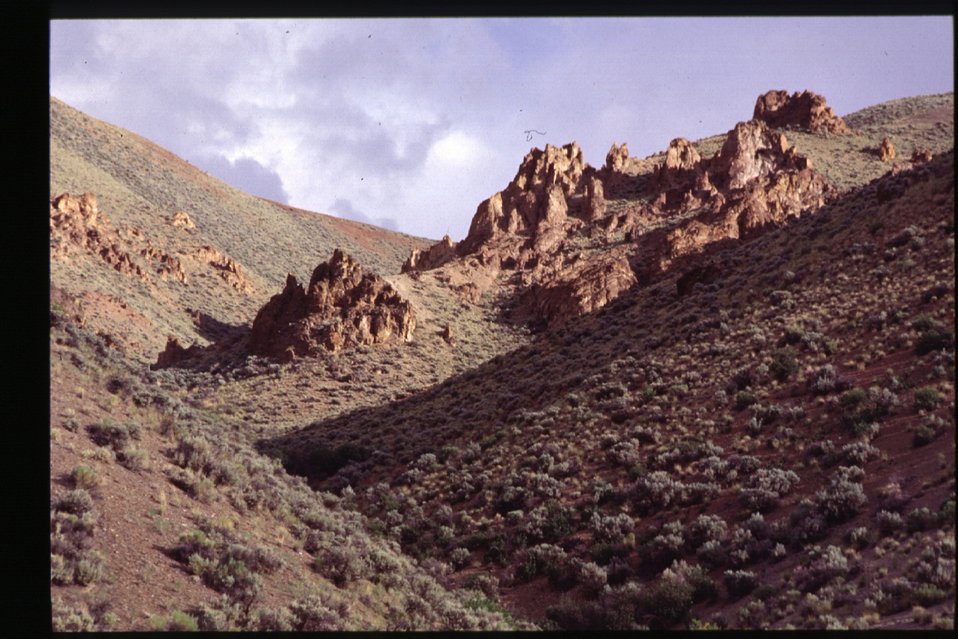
Scenics Salmon Field Office UCSC Upper Columbia Salmon Clearwater District